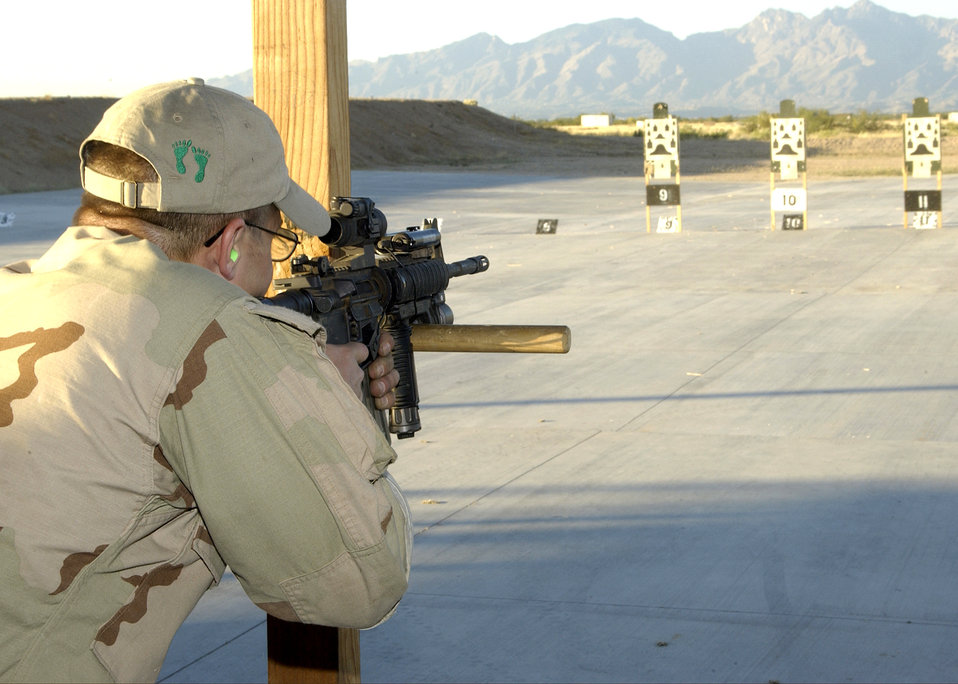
Making their mark

DAVIS-MONTHAN, Ariz. (AFPN) -- Senior Airman Joe Piccoli fires his M-4 rifle target training here. Airman Piccoli is with the 306th Rescue Squadron.